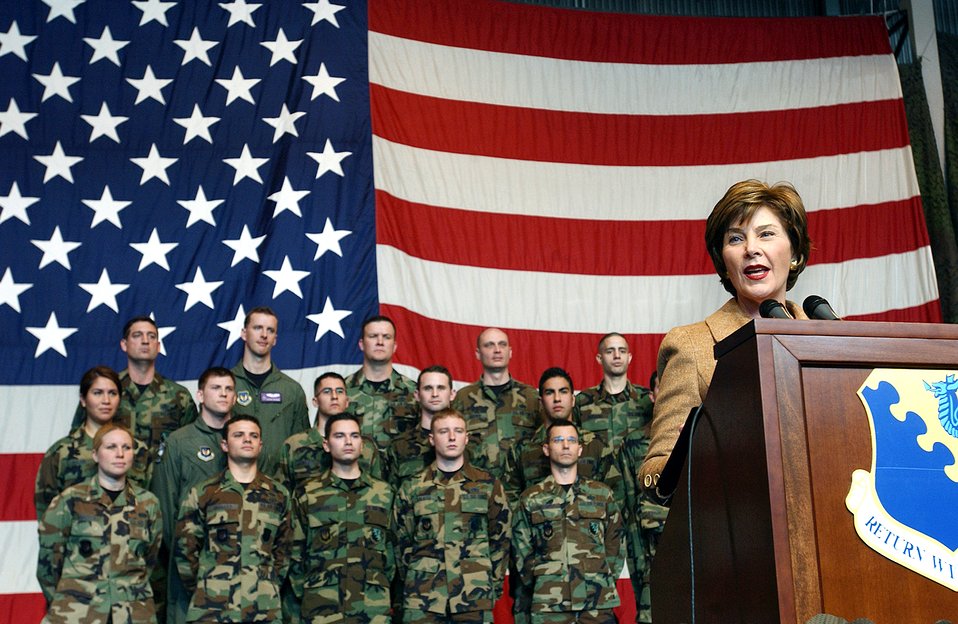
First lady visits Aviano

AVIANO AIR BASE, Italy (AFPN) -- First Lady Laura Bush thanks Airmen for their sacrifices and efforts in the war on terror during her visit here Feb. 10. Mrs. Bush is the head of the official U.S. Olympic delegation. She visited here on her way to the Olympics with her daughter, Barbara, and five former Olympic medalists.